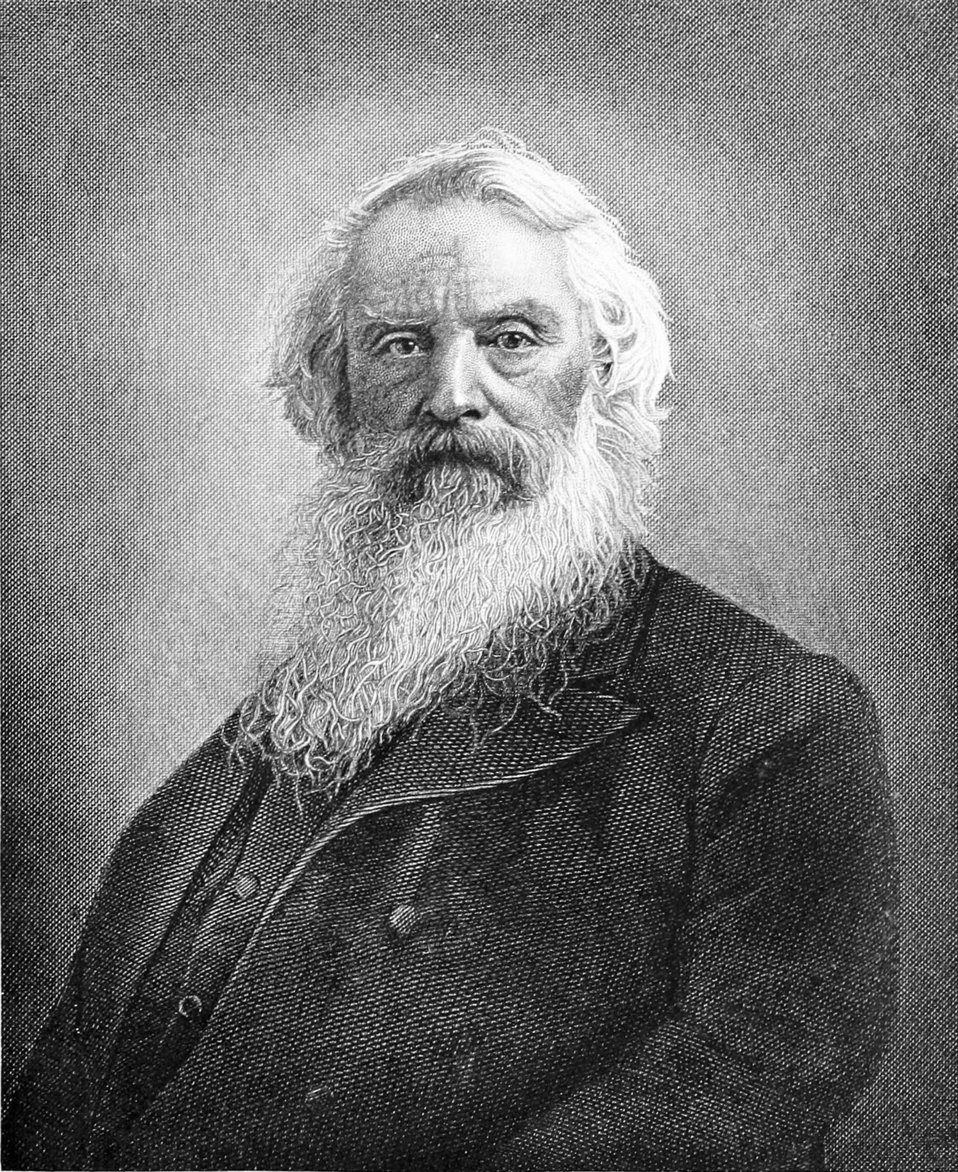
Appletons' Morse Jedidiah - Samuel Finley Breese (engraving)